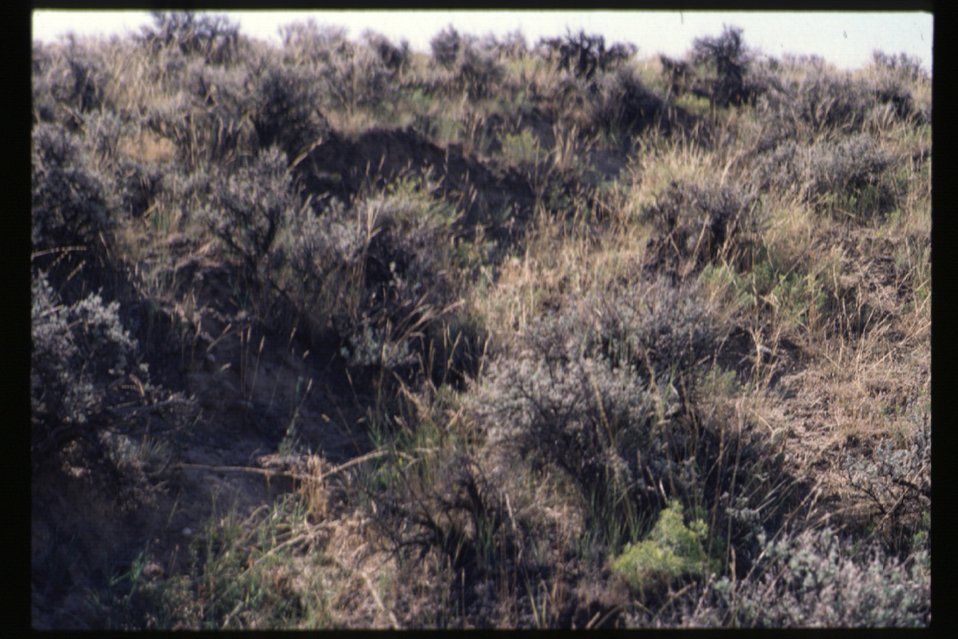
Discovery Hills Deep cut treads Lewis and Clark Trail Salmon Field Office UCSC Upper Columbia Salmon Clearwater District